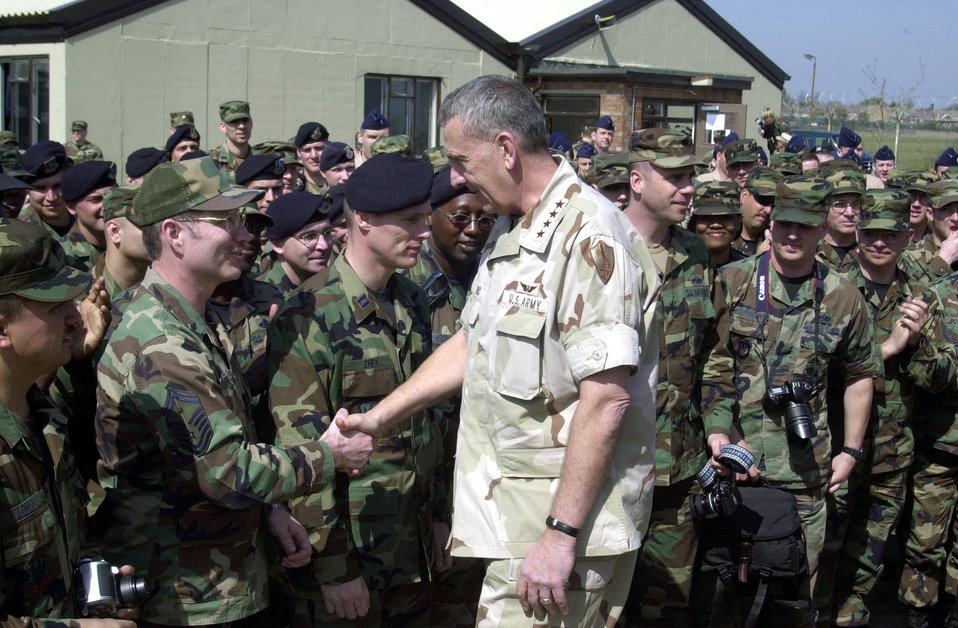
General Tommy Franks visits airmen

OPERATION IRAQI FREEDOM -- Army Gen. Tommy Franks, commander of U.S. Central Command, visits with airmen of the 457th Air Expeditionary Group during a visit to a forward-deployed bomber location supporting Operation Enduring Freedom.